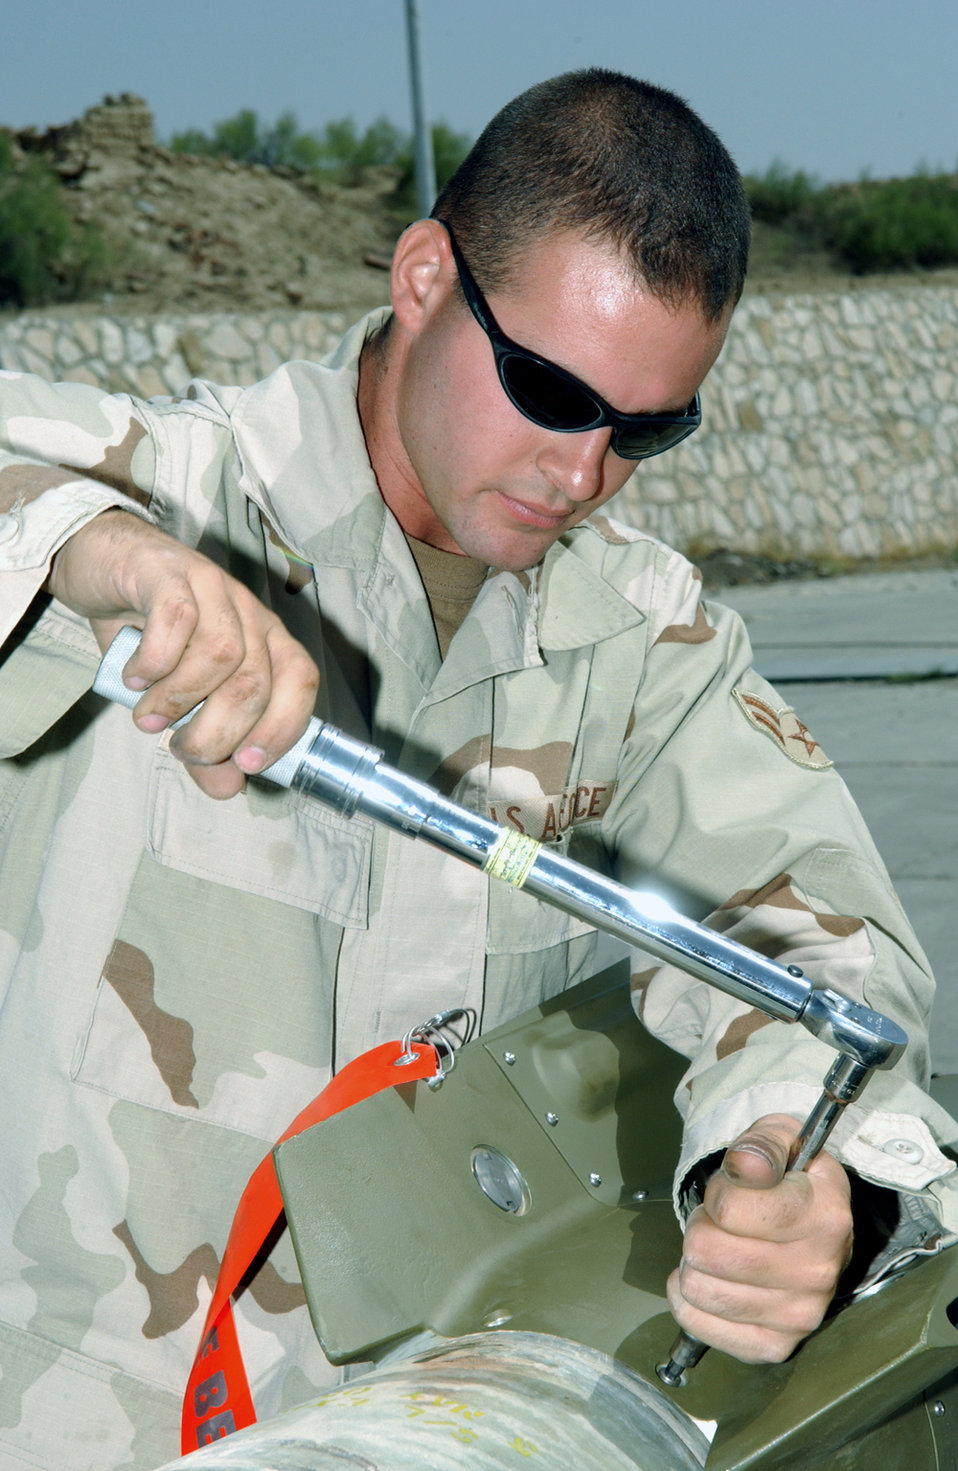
Giving Warthog its lethal bite

BAGRAM AIR BASE, Afghanistan -- Airman 1st Class Brett Curry attaches a rear fin assembly to a 500-pound laser guided bomb. He is assigned to the 455th Expeditionary Aircraft Maintenance Squadron and is deployed from Eielson Air Force Base, Alaska.